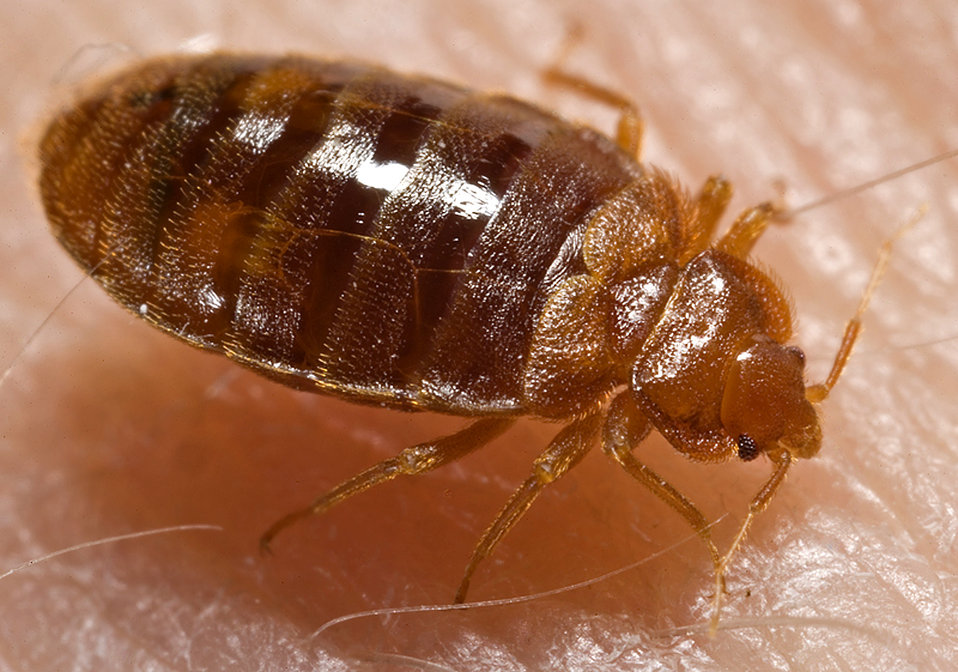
Close-up of a bedbug

This 2006 photograph depicted an oblique-dorsal view of a bedbug nymph, Cimex lectularius, as it was in the process of ingesting a blood meal from the arm of a 'voluntary' human host. Bedbugs are not vectors in nature of any known human disease. Although some disease organisms have been recovered from bedbugs under laboratory conditions, none have been shown to be transmitted by bedbugs outside of the laboratory.The common bedbug is found worldwide. Infestations are common in the developing world, occurring in settings of unsanitary living conditions and severe crowding. In North America and Western Europe, bedbug infestations became rare during the second half of the 20th century and have been viewed as a condition that occurs in travelers returning from developing countries. However, anecdotal reports suggest that bedbugs are increasingly common in the United States, Canada, and the United Kingdom.